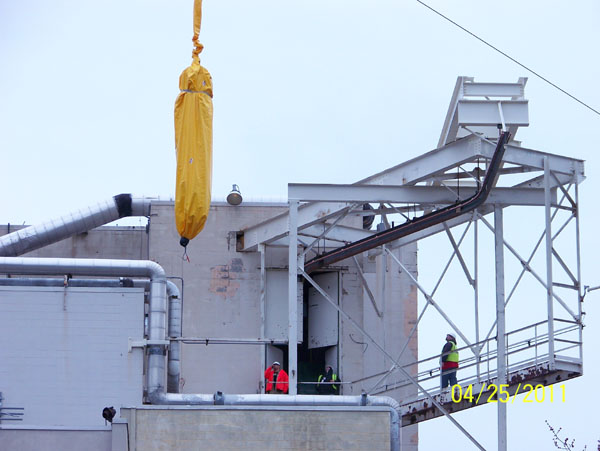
West Valley Off Gas Cell cleanup

Workers remove a vessel from the Off Gas Cell at the West Valley Demonstration Project. The tanks are safely wrapped in a cover to prevent the spread of contamination.